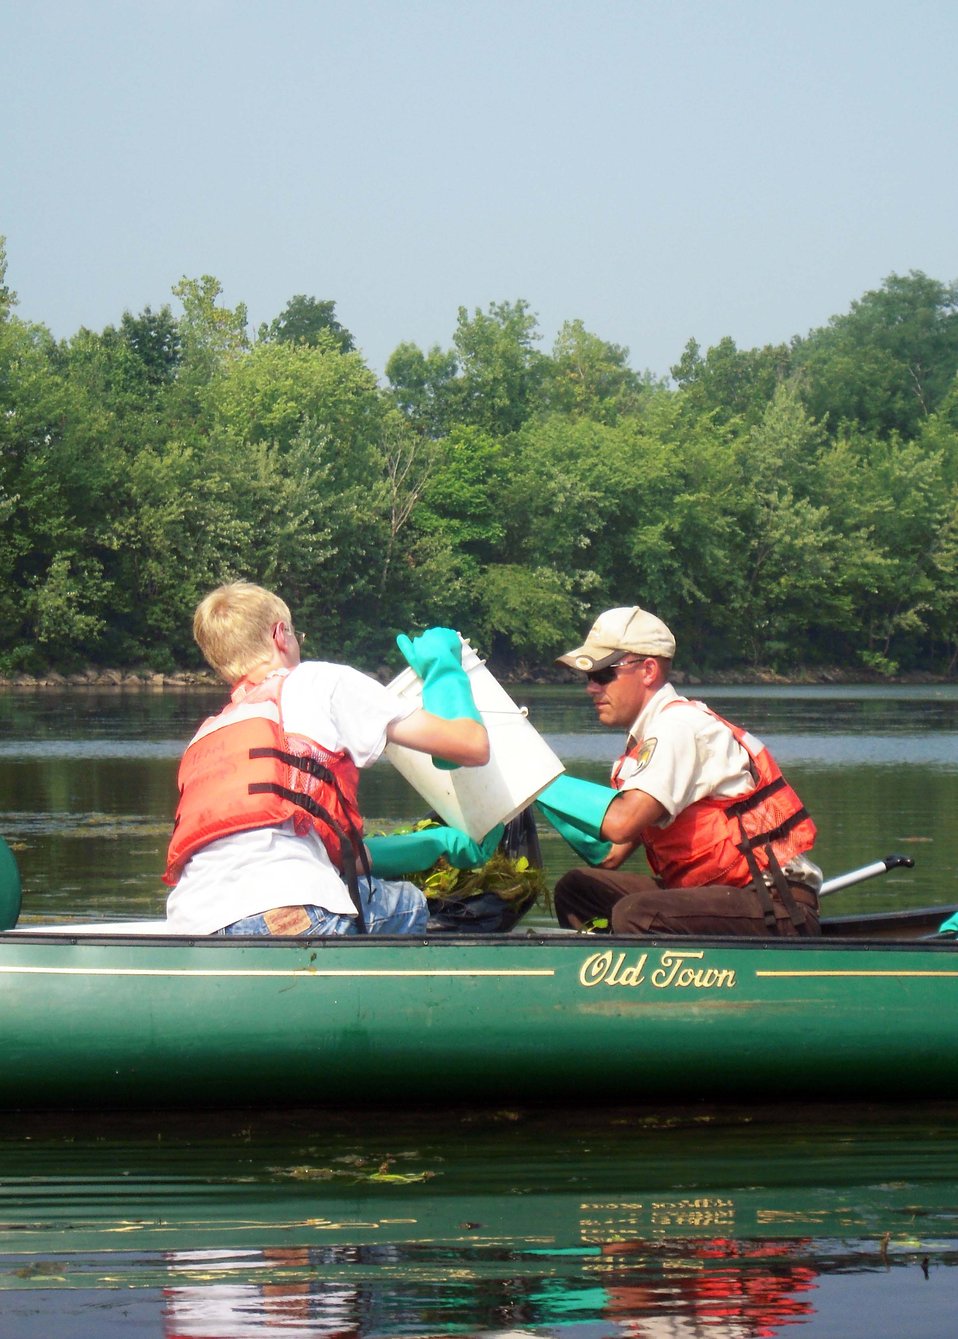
YCC crew removing water chestnut

Emptying bucket of water chestnuts into trash bag.